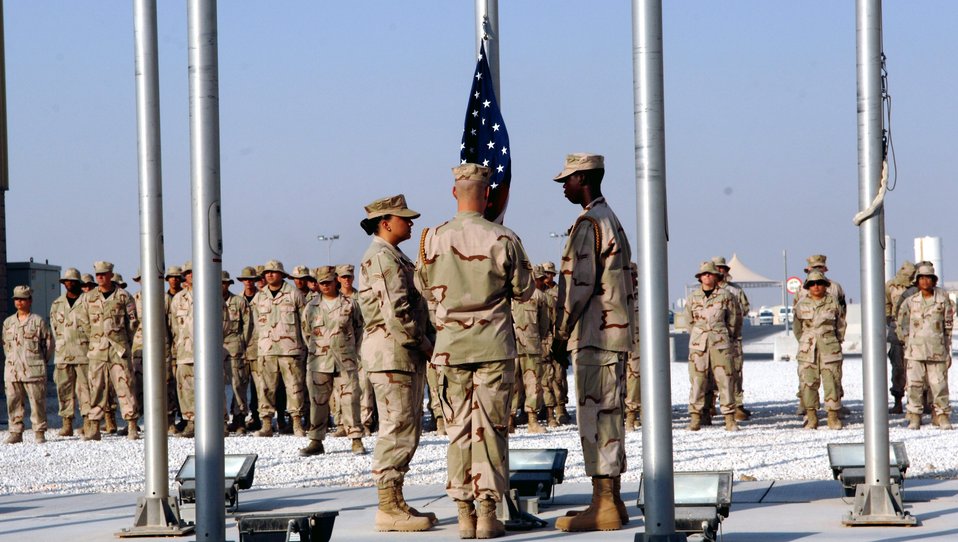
379th AEW Airmen pay tribute to Air Force's 60th birthday

Airman 1st Class Evon Hebner (left), Staff Sgt. Christopher McDonald (center) and Airman 1st Class Miguel Leon raise the colors in a reveille ceremony in honor of the Air Force 60th birthday Sept. 18 in Southwest Asia. The 379th Air Expeditionary Wing began a week-long celebration Sept. 12 that included fitness-related events and specials at Army and Air Force Exchange concessionaires. The Airmen are with the 379th AEW Honor Guard.